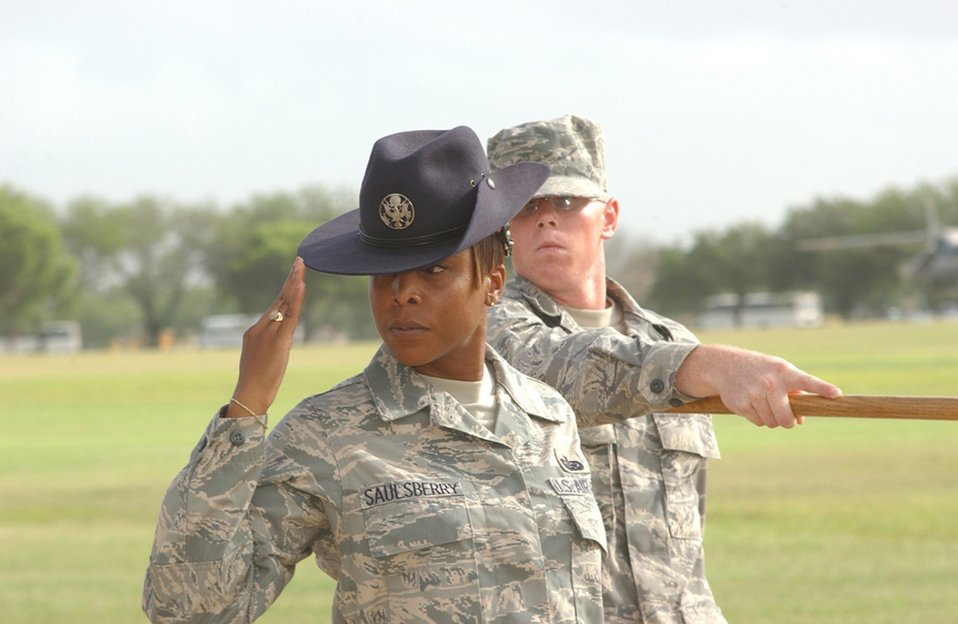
Armed Forces Integration Day

Staff Sgt. Nicole Saulsberry and her flight pass in review during a Basic Military Training graduation ceremony July 25 at Lackland Air Force Base, Texas. Sergeant Saulsberry is a military training instructor with the 323rd Training Squadron.